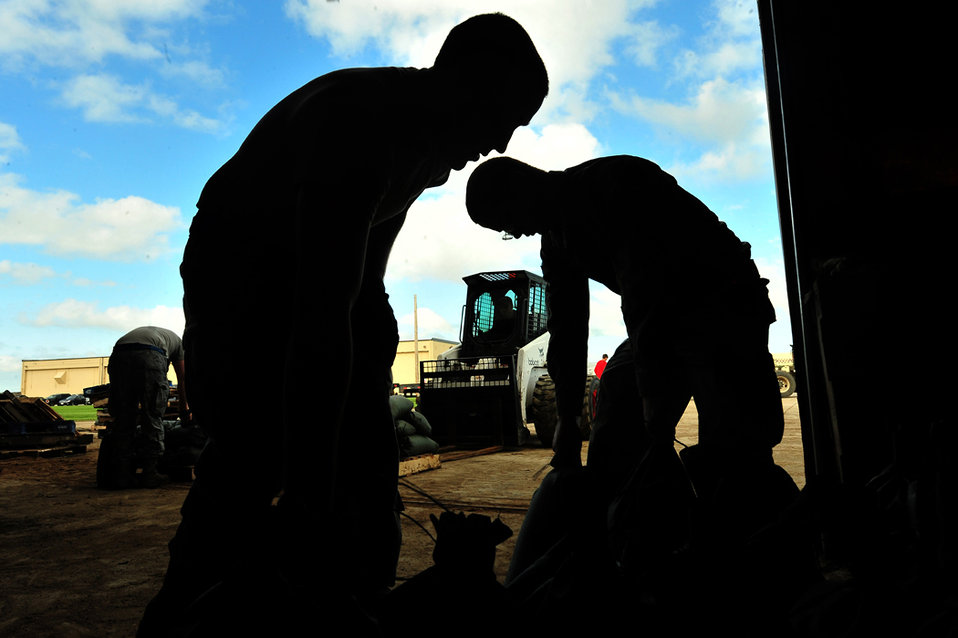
Minot Airmen fight flood

Staff Sgt. David Powell and Airman 1st Class Cody Farley stack sandbags on pallets to be used to try and stop raising flood water threatening Minot, N.D. Sergeant Powell and Airman Farley are crew chiefs with the 5th Aircraft Maintenance Squadron at nearby Minot Air Force Base.